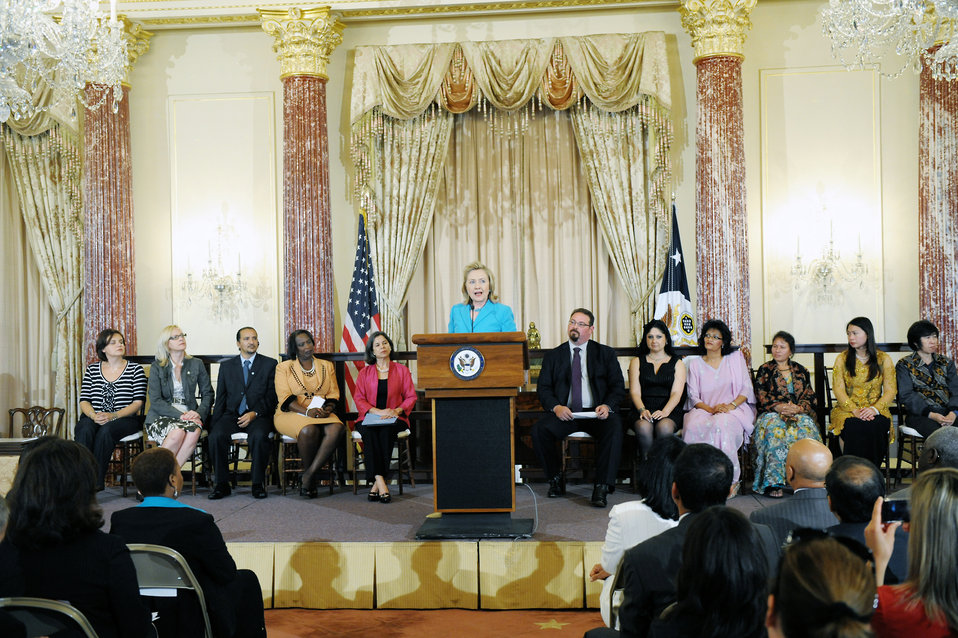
Secretary Clinton Releases the 2011 Trafficking in Persons Report

U.S. Secretary of State Hillary Rodham Clinton releases the 2011 Trafficking in Persons Report, at the U.S. Department of State in Washington, D.C., on June 27, 2011.